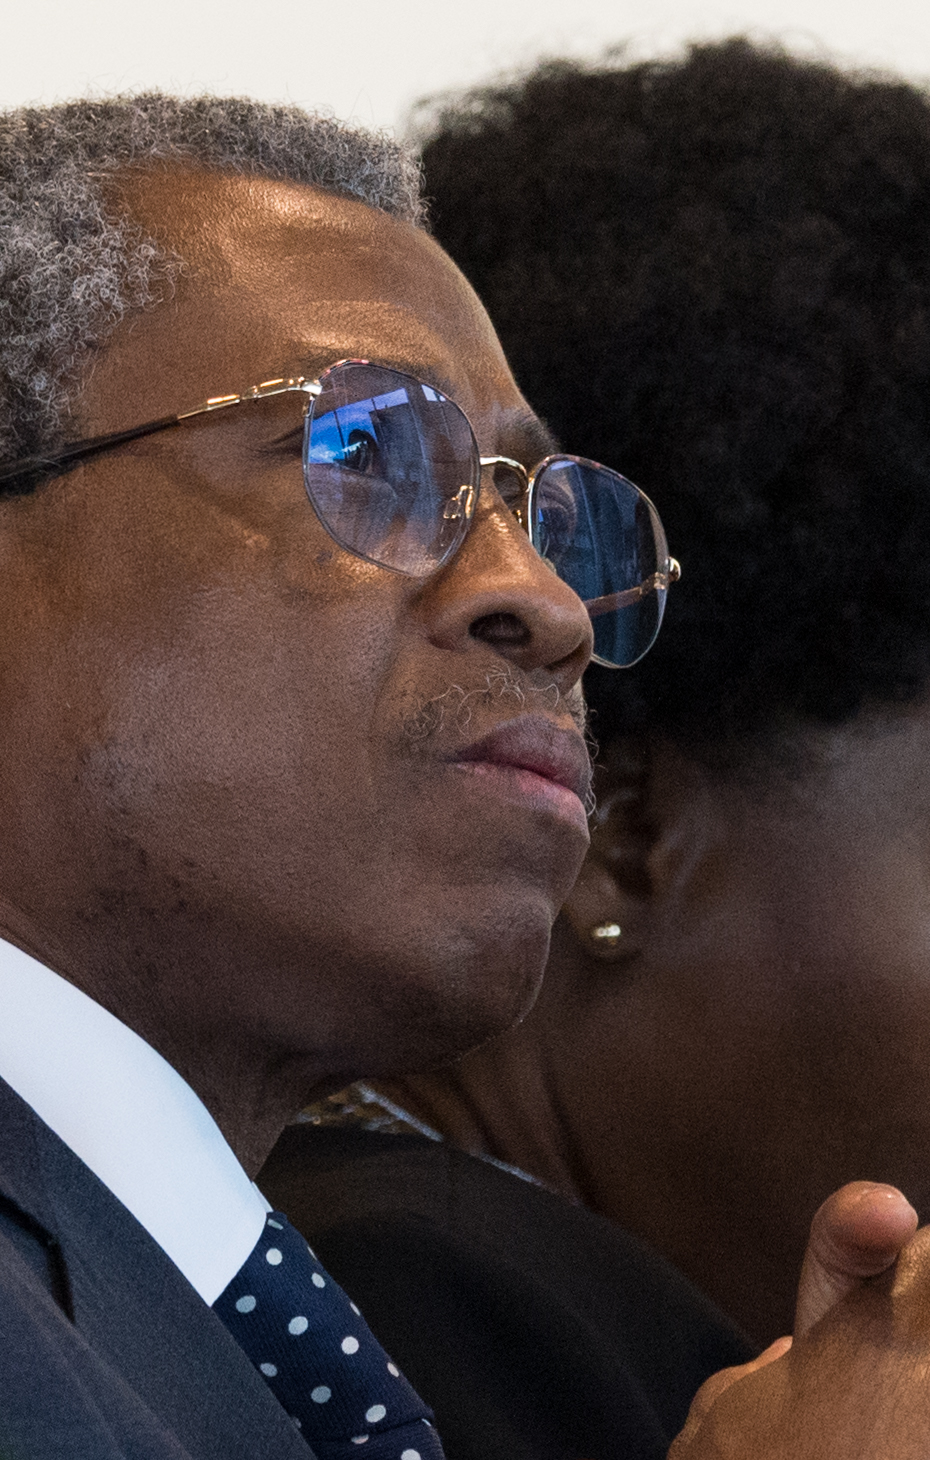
Embassy representatives listen to Agriculture Secretary Tom Vilsack speak at the Share the Season event organized by the U.S. Department of State Office of the Chief of Protocol Diplomatic Partnership Division at the Business Roundtable (BRT) in Washington, D.C. on Thursday, Nov. 21, 2013. BRT is a non-profit association of chief executive officers of leading U.S. companies that encourages embassies and diplomats to be active in local community service projects.